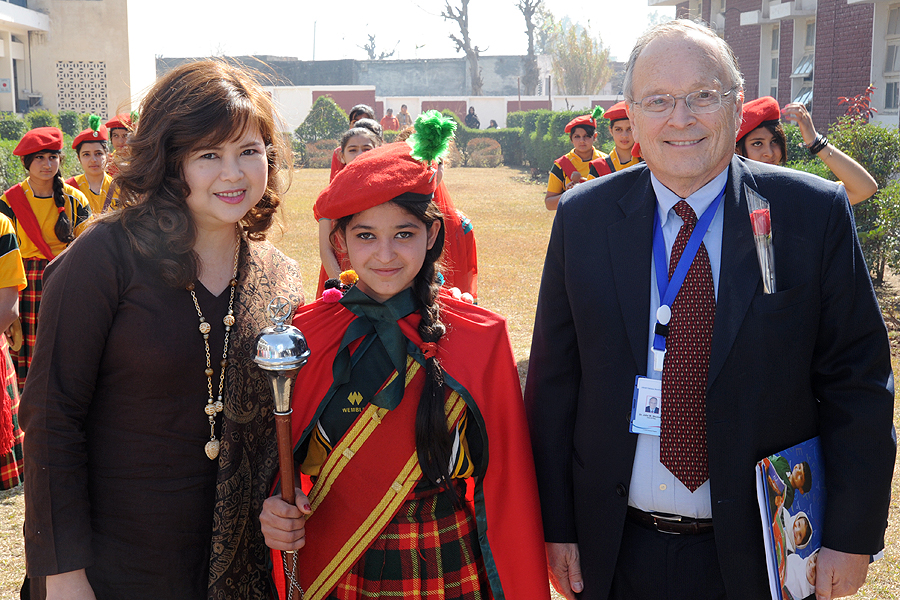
United States and Pakistan Launch the Pakistan Reading Project